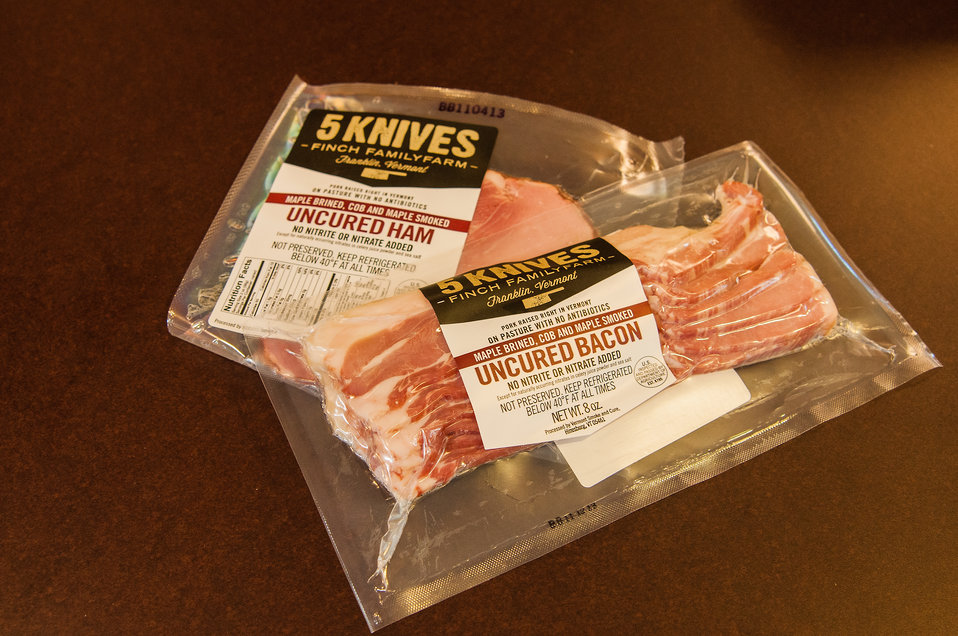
Vermont Smoke and Cure in Hinesburg, VT produces smoked and salt cured beef and pork products from local farms. Vermont Smoke and Cure received a U.S. Department of Agriculture (USDA) Rural Development (RD) Business and Industry Loan program and a Value Added Producer Grant. The loan and grant provided the capital resources necessary for business growth and job creation on Sep. 18, 2013.